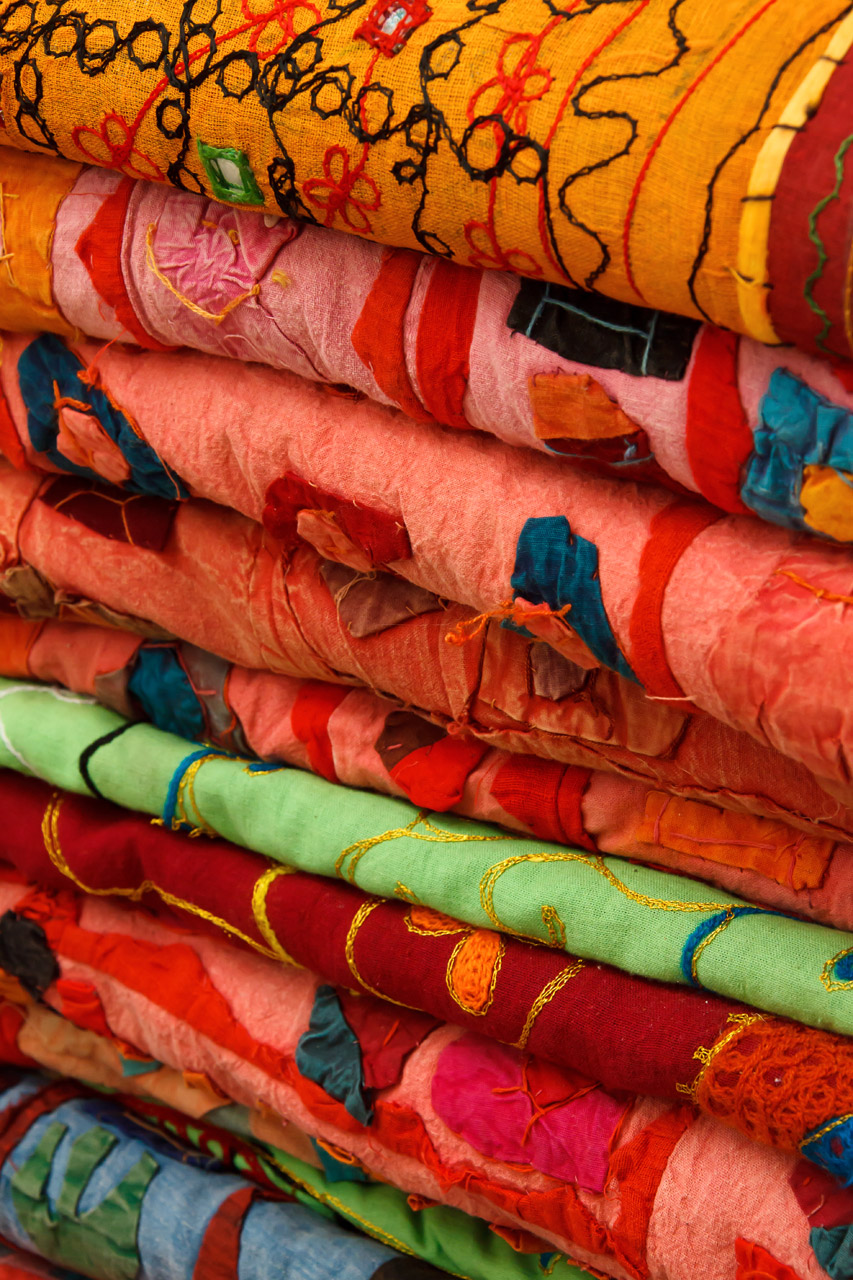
Colorful fabrics stacked

Pattern image of stack of colorful fabrics.